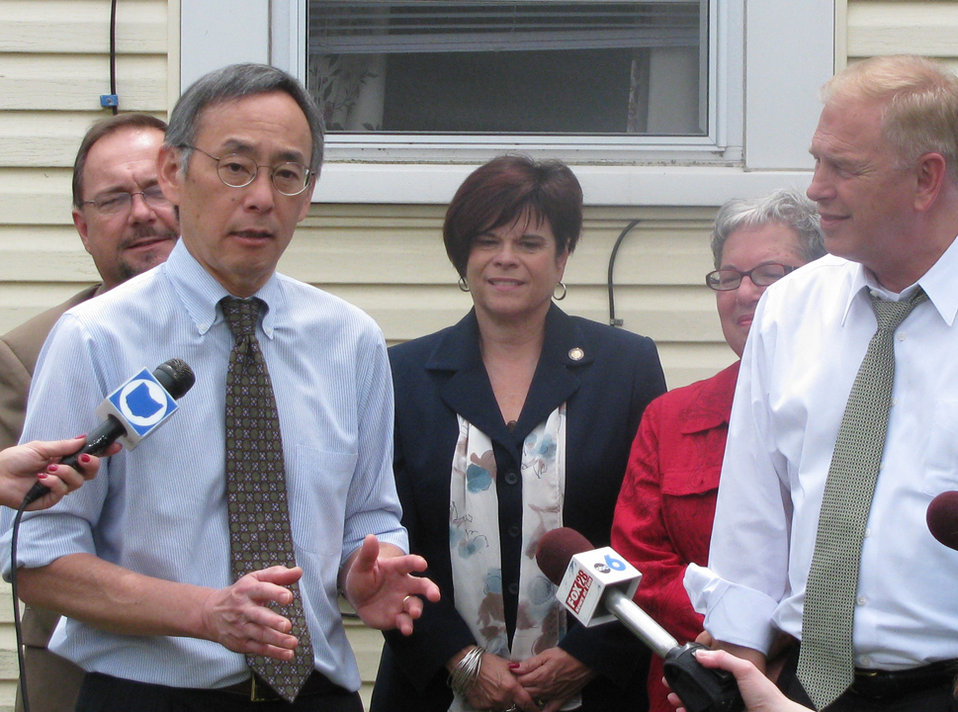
Ohio3